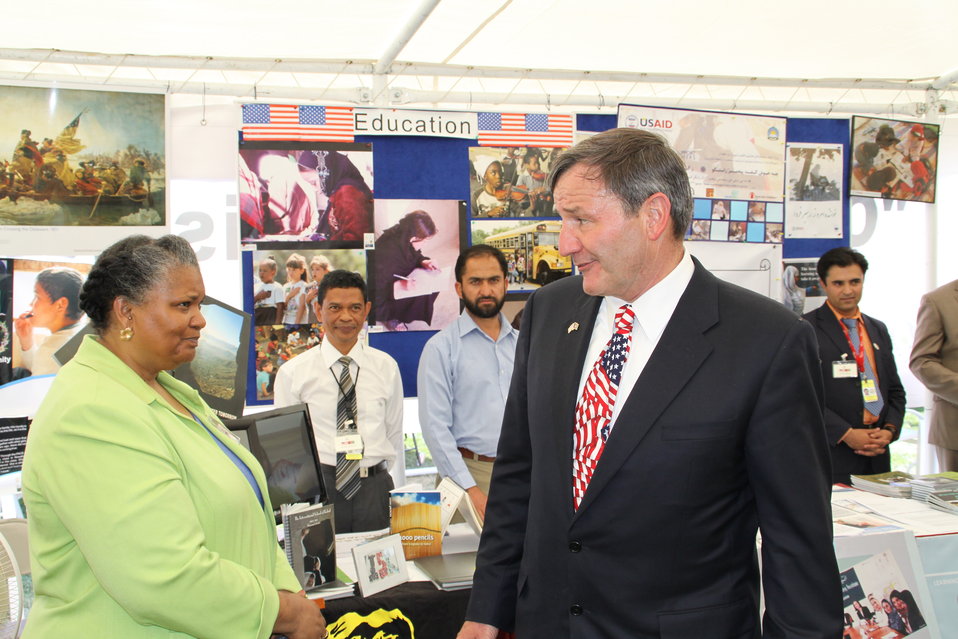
Kabul Official July 4th Celebration